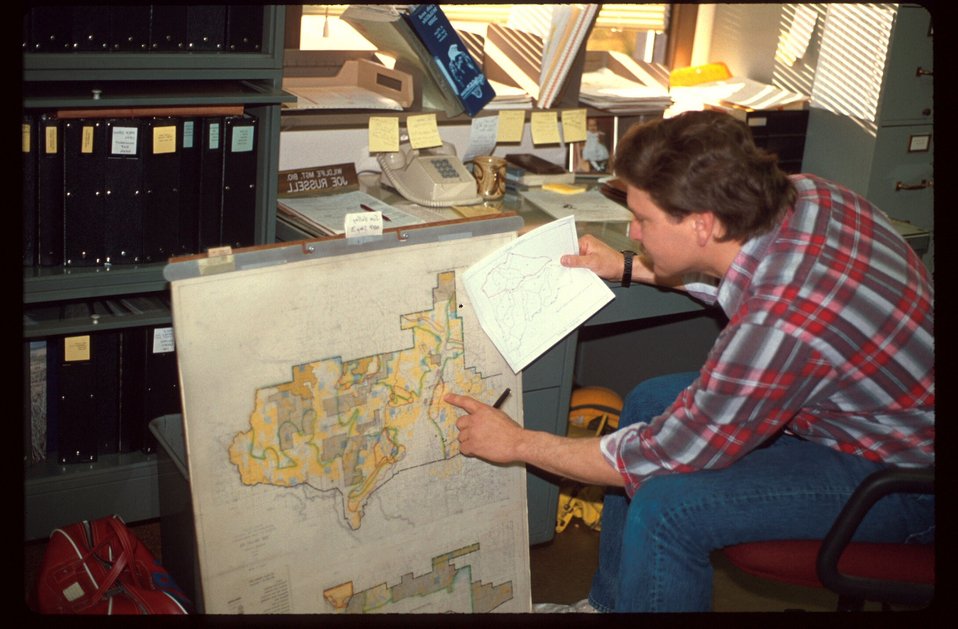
Range Restoration Project